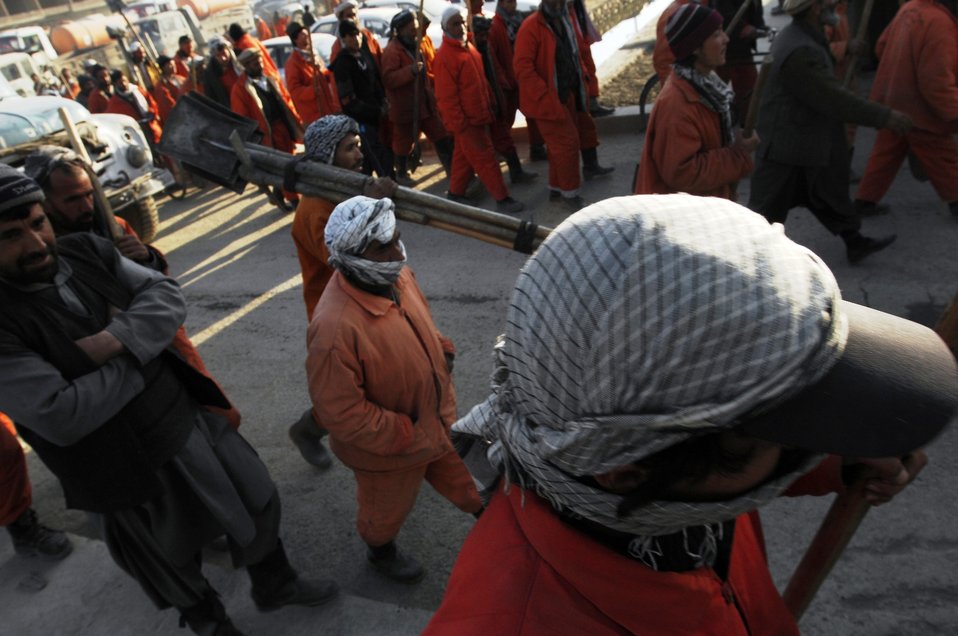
Care60